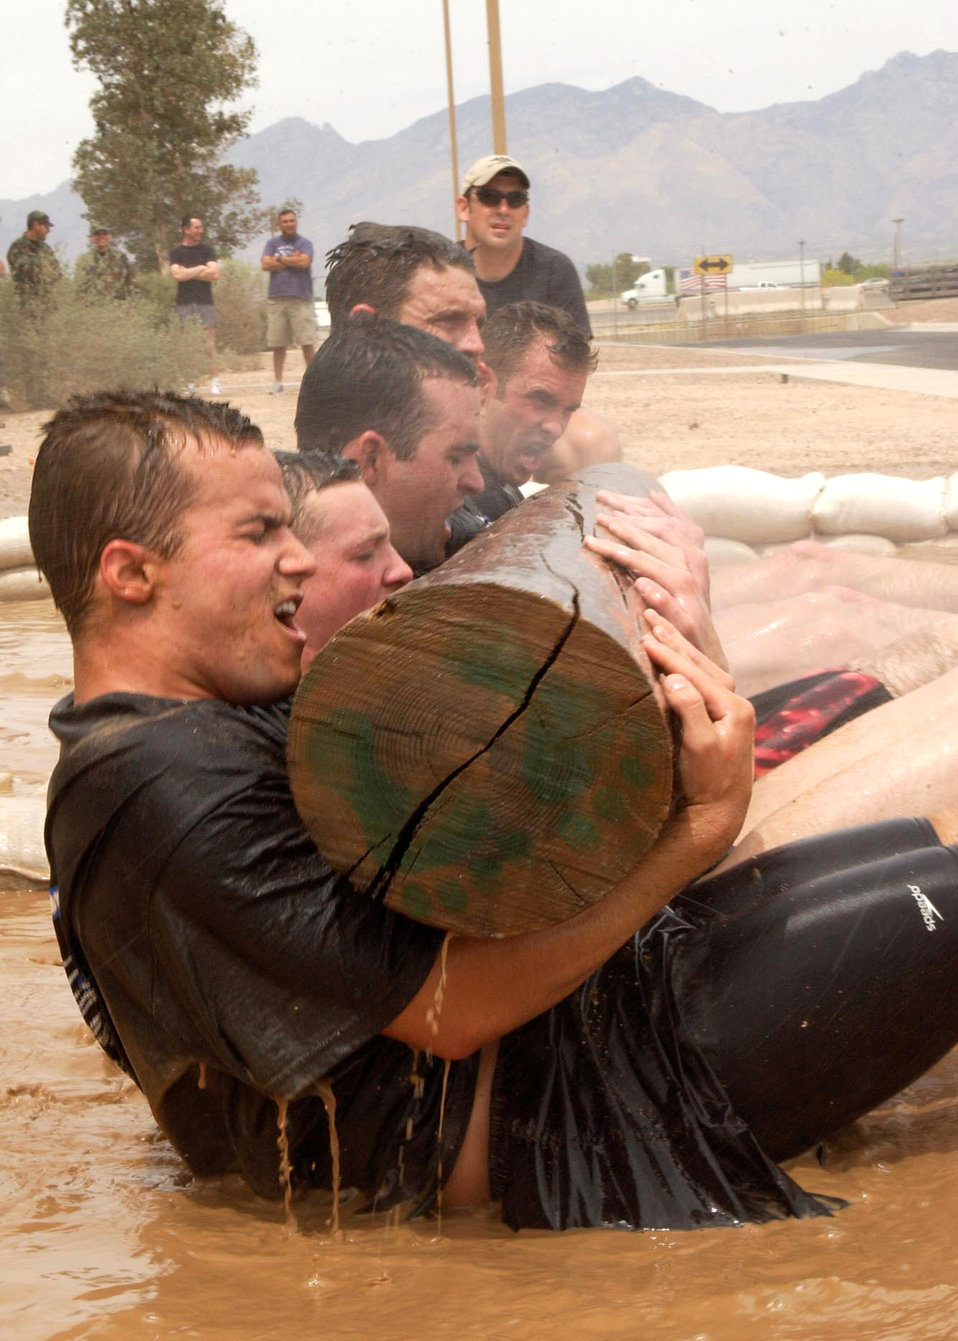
PJ selection process

Military and civilian applicants taking part in the 306th Rescue Squadron pararescue screening do sit-ups in a mud pit while holding a wooden log at Davis-Monthan Air Force Base, Ariz., on Friday, April 21, 2006. Applicants must pass a timed 3-mile run, 1,500-meter swim, calisthenics and other tasks before proceeding to the 10-week indoctrination course at Lackland AFB, Texas.